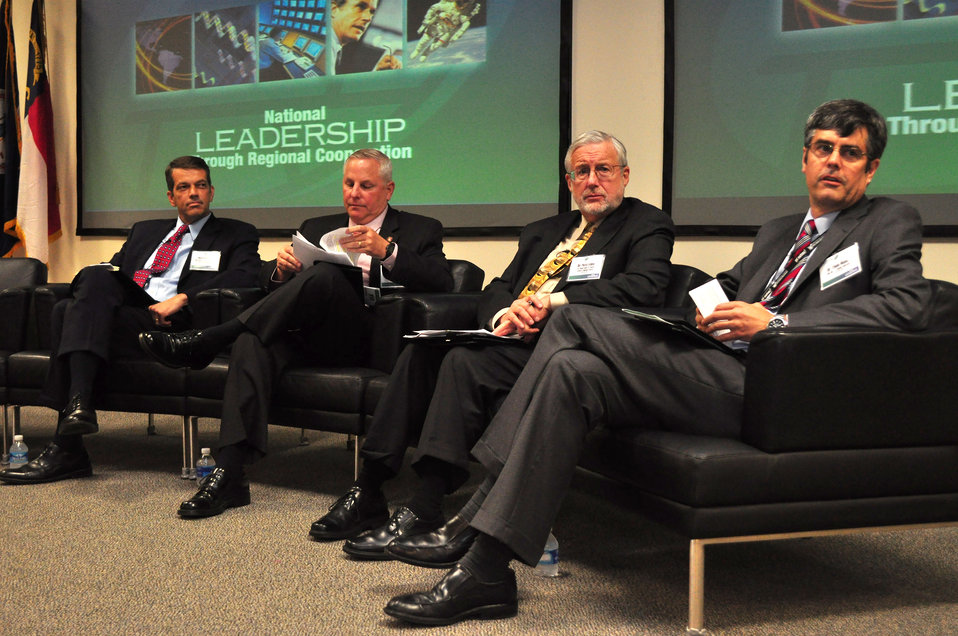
Tennessee Valley Corridor 2013 Oak Ridge

13-062 DOE photo Lynn Freeny 5-29-2013 L to R Mark Whitney Manager EM ORO, Andy Page Manager of ORAU, Dr. Peter Lyons DOE Assistant Secretary for Nuclear Energy and Dr. Thom Mason ORNL Lab. Director Oak Ridge Tennessee